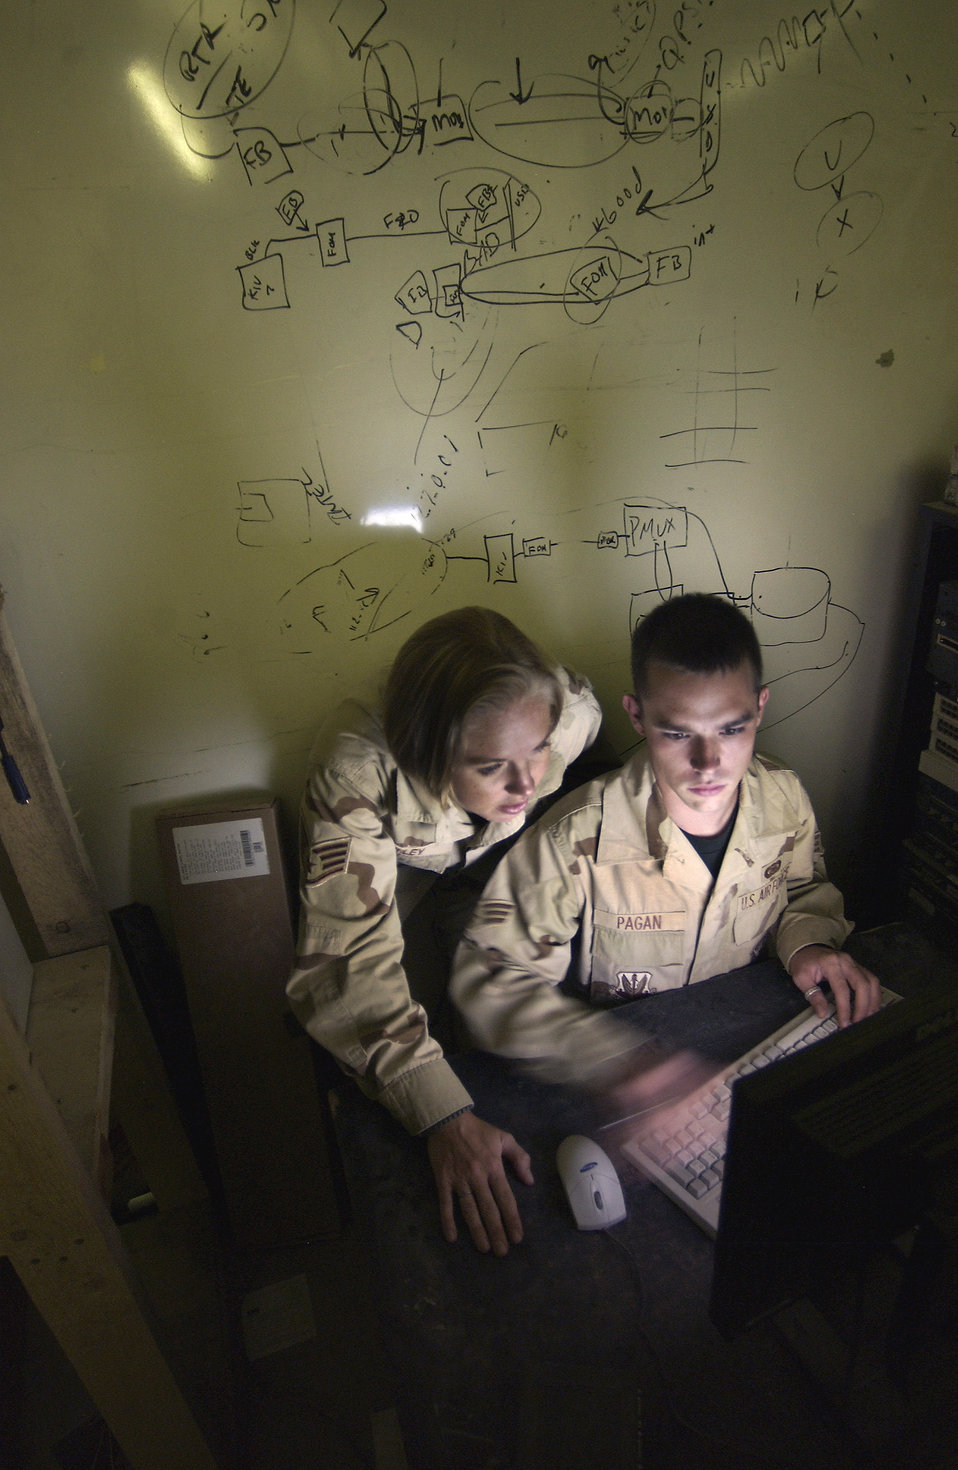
Getting connected

BAGHDAD INTERNATIONAL AIRPORT, Iraq -- Staff Sgt. Karen Riley (left) and Senior Airman Jaime Pagan configure a network server. Both are deployed here as part of the 447th Expeditionary Communication Squadron, which is responsible for running the network control center and keeping the Air Force in Baghdad online. Pagan is a server manager from the 33rd Combat Communications Squadron at Tinker Air Force Base, Okla. Riley is a computer maintenance technician from the 22nd Communications Squadron at McConnell AFB, Kan.